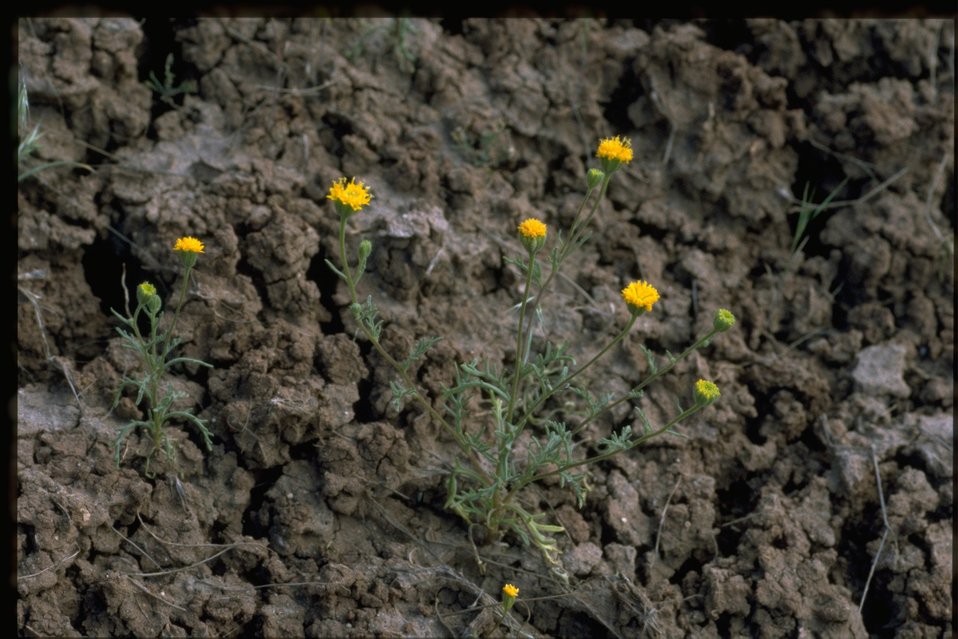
Far shot of John Day's pincushion (Chaenactis nevii).